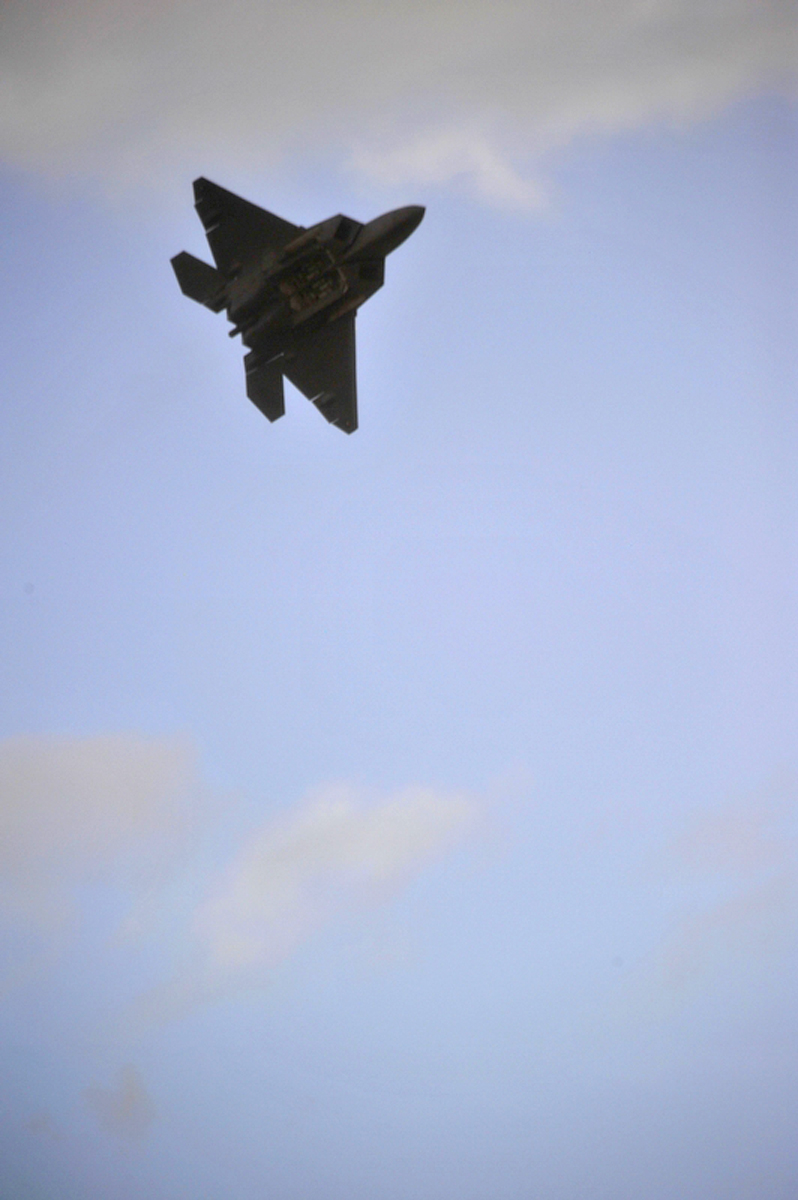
F-22 Raptor rolls out in Hawaii

An F-22 Raptor is put through a demonstration display July 9, 2010, above the water surrounding the island of Oahu in Kapolei, Hawaii, as part of the dedication celebration of the F-22 becoming the new aircraft belonging to Joint Base Pearl Harbor-Hickam.